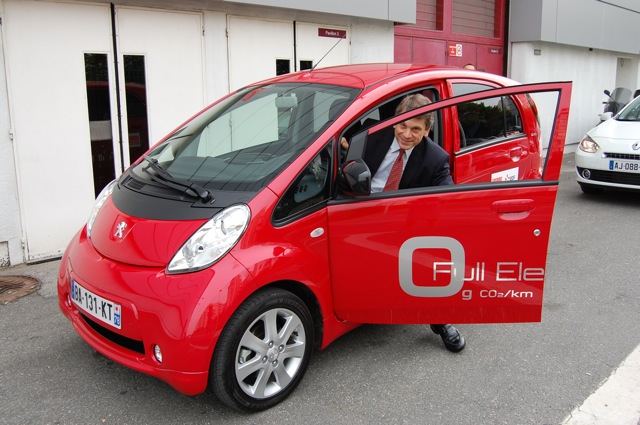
David Sandalow at the Paris Auto Show